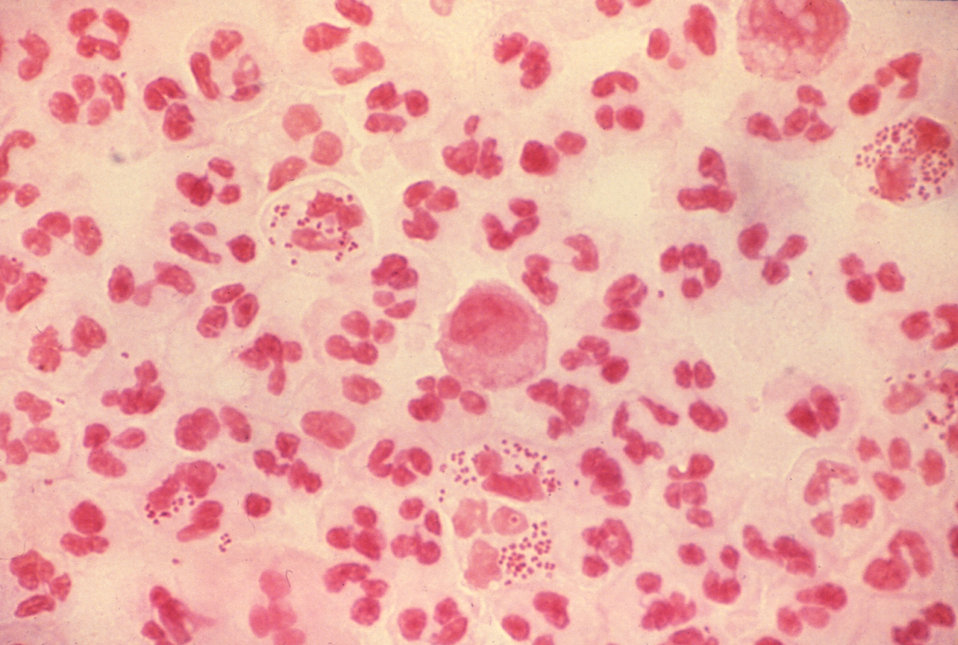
This gram-stained smear depicts N. gonorrhoeae gonococci from a patient diagnosed with acute gonococcal urethritis.